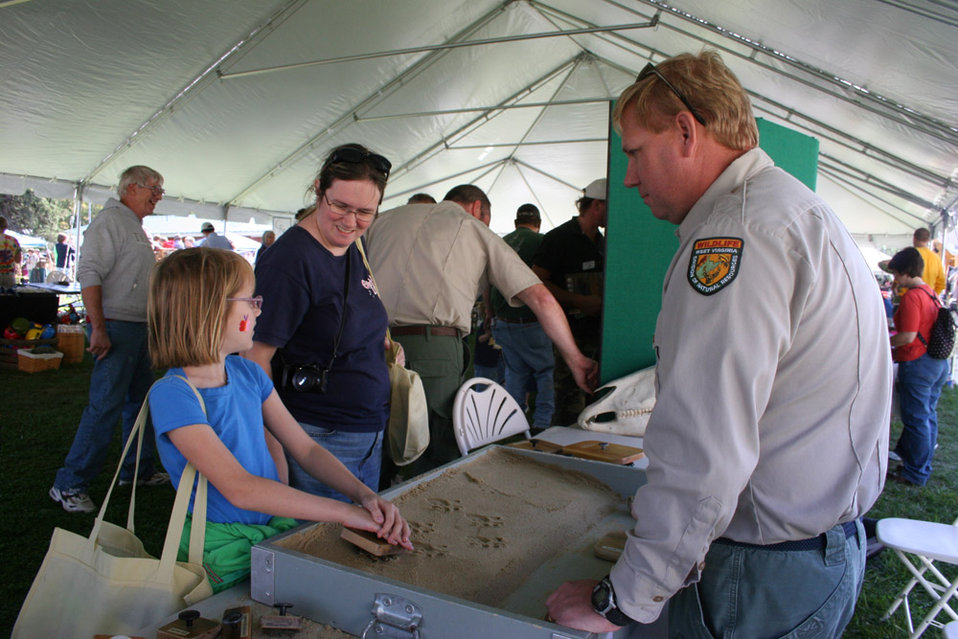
Freshwater Folk Festival

The 5th Annual Freshwater Folk Festival at White Sulphur Springs National Fish Hatchery in West Virginia.Credit: USFWS